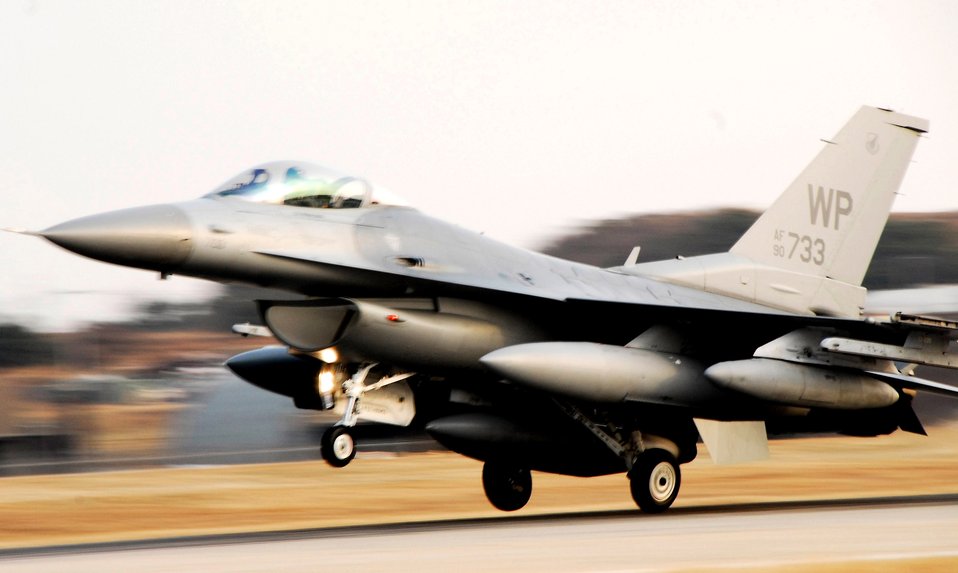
Kunsan, Eielson swap F-16s

An F-16 Fighting Falcon lands at Kunsan Air Base, South Korea, after a Jan. 18 flight from Eielson Air Base, Alaska. The 80th Fighter Squadron will be receiving 18 Common Configuration Implementation Program Block 40 jets from the Alaskan-based unit and Eielson AFB will in-turn receive the 80th FS Block 30 jets for an aggressor squadron.